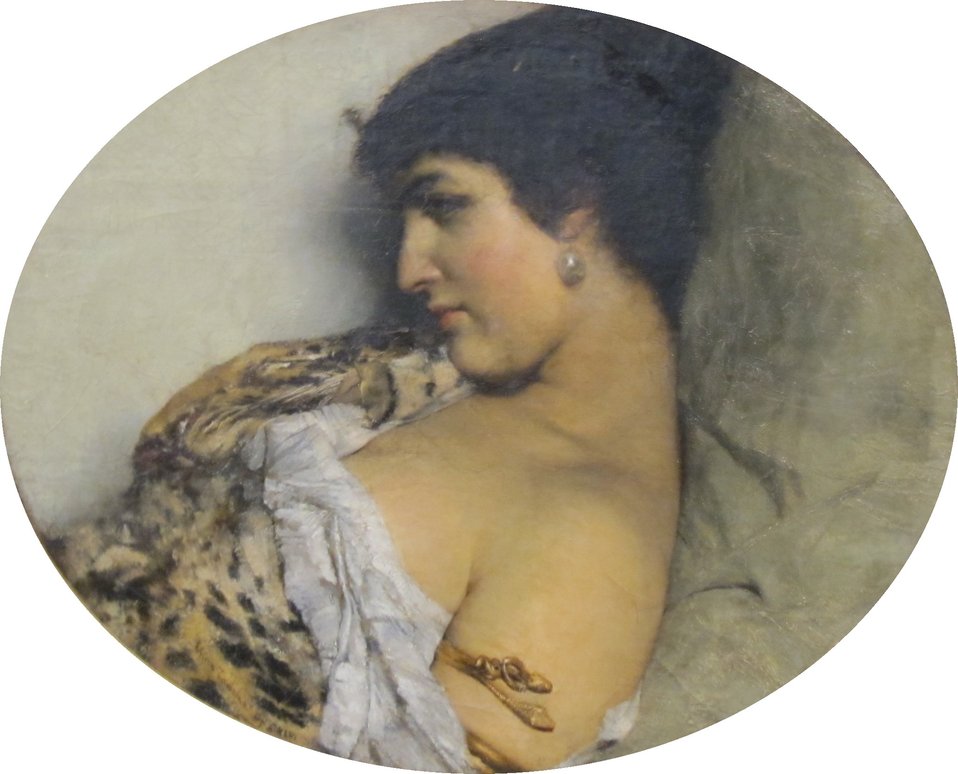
Cleopatra by Lawrence Alma-Tadema